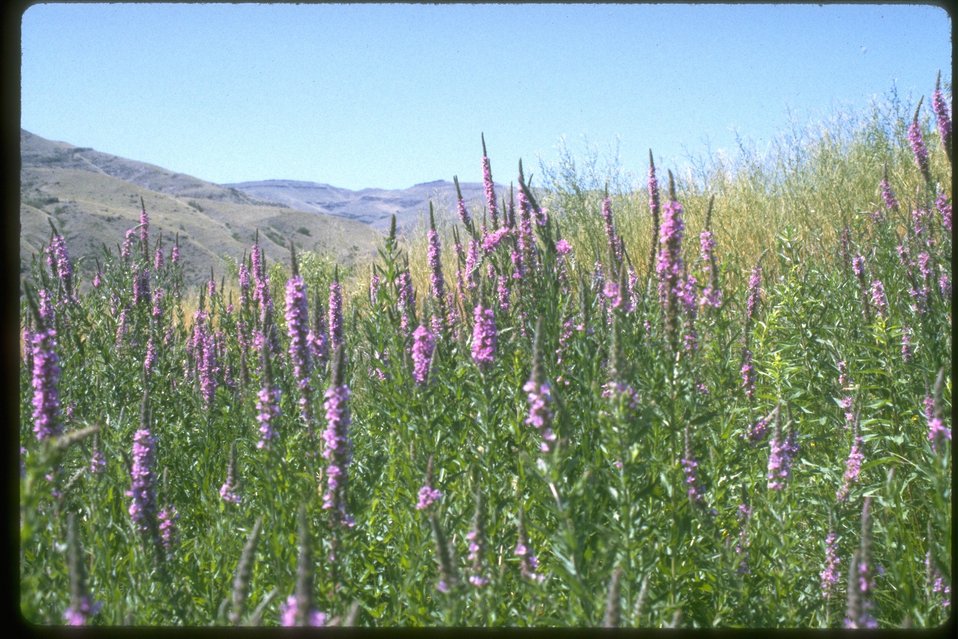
Purple Loosestrife flowers